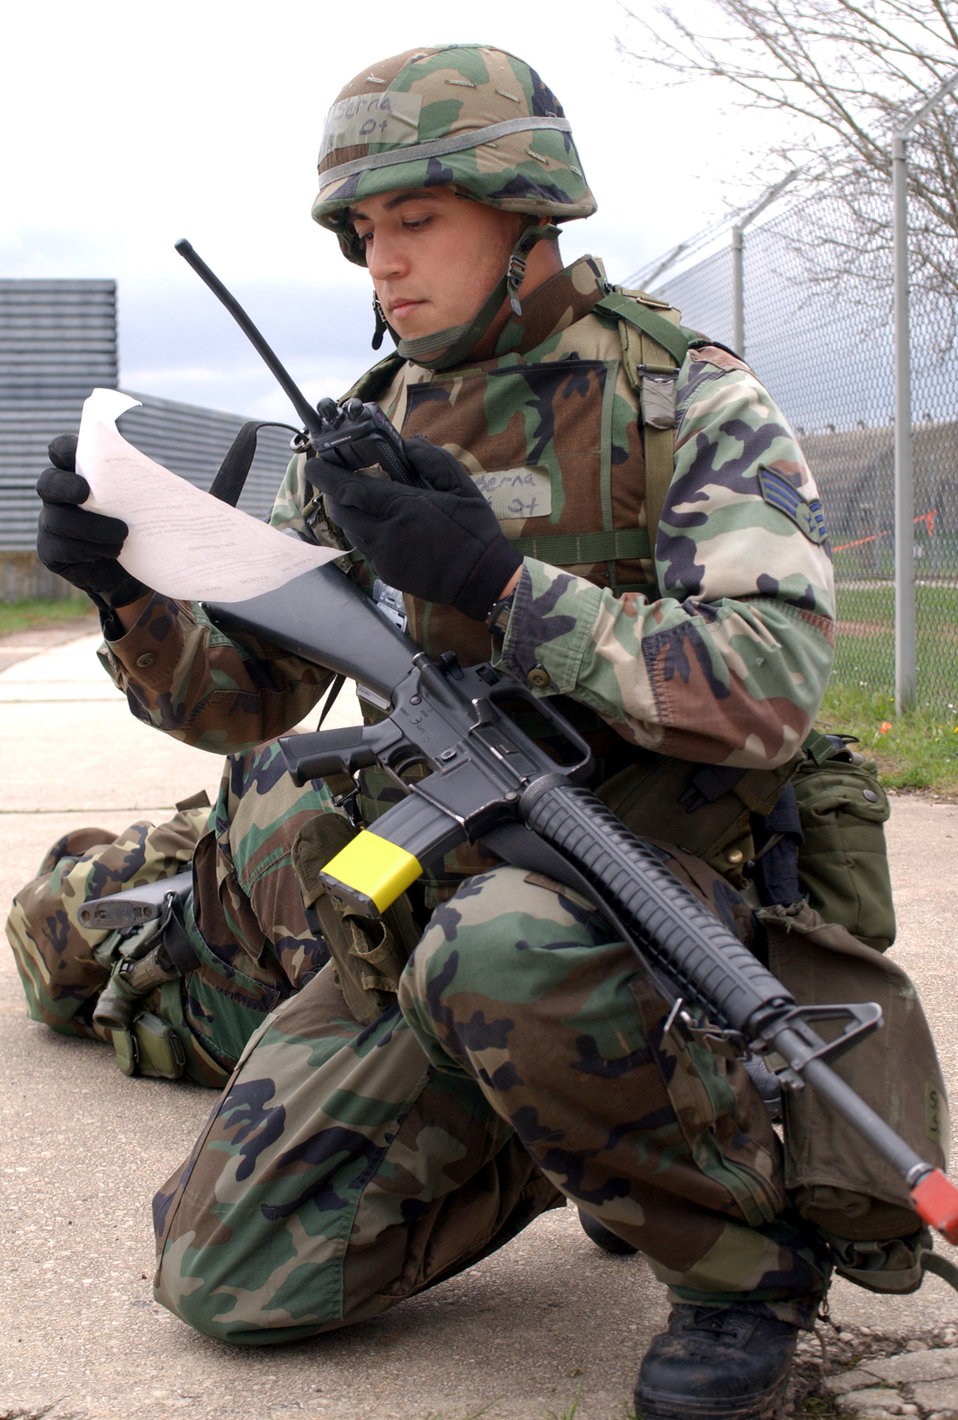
Checking the scenario

SPANGDAHLEM AIR BASE, Germany -- Senior Airman Richard Serna stops to call in an incident listed on a scenario sheet during exercise Harley Saber here April 20. Airman Serna is a security forces Airman with the 52nd Security Forces Squadron.